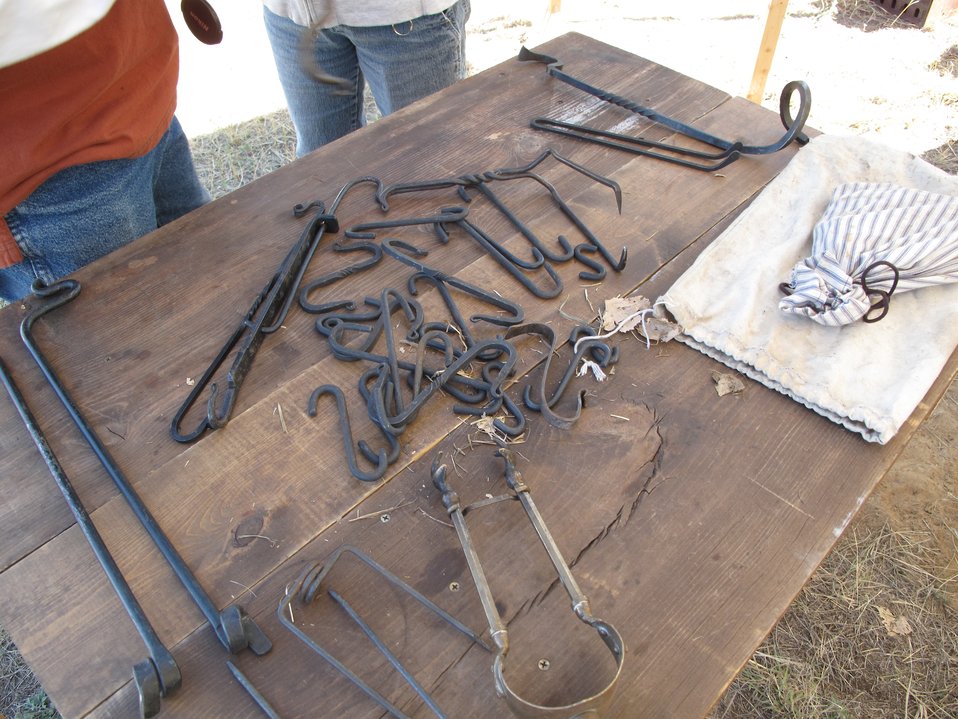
Refuge Round-Up 2010

All made by hand.